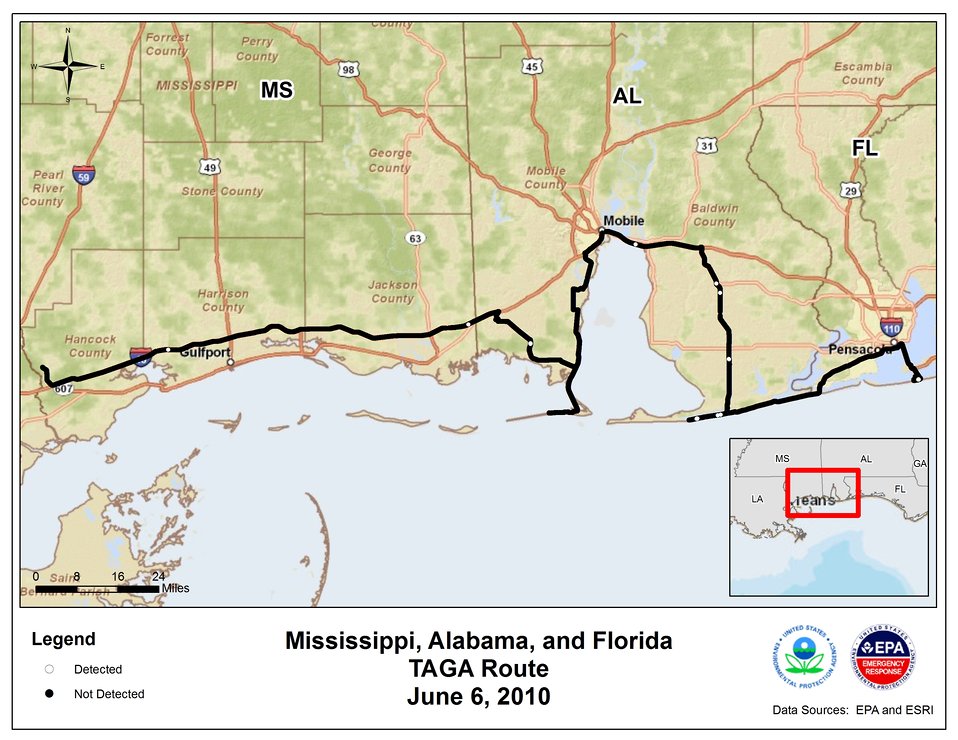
EPA TAGA Air Monitoring Locations June 6, 2010